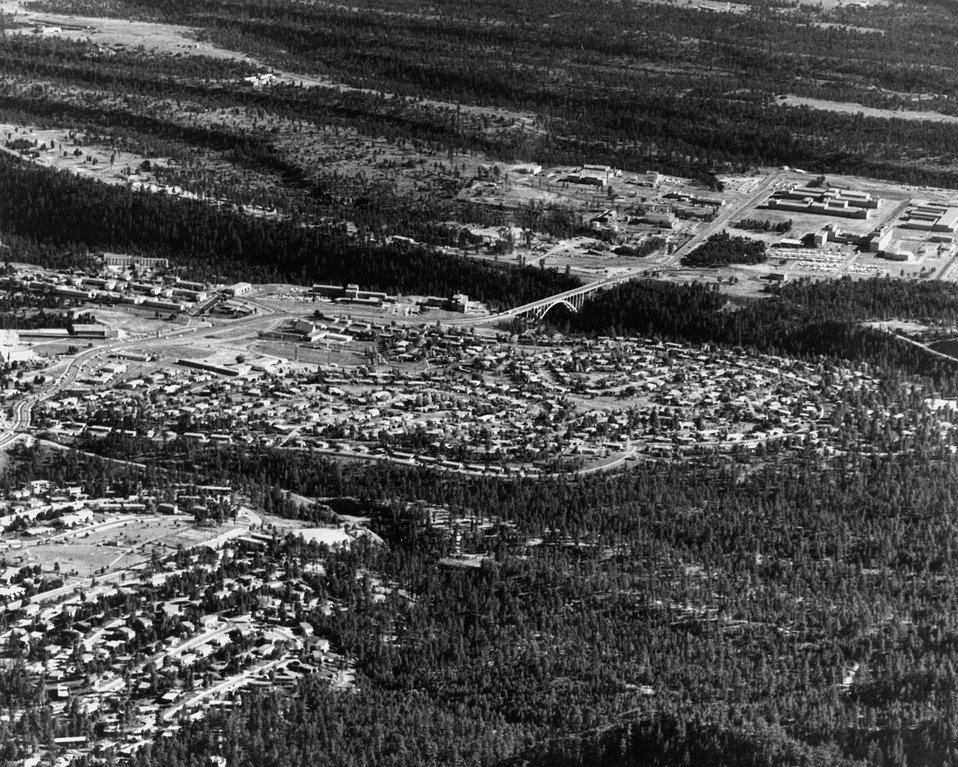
Aerial view of Los Alamos Scientific Laboratory. c. 1964